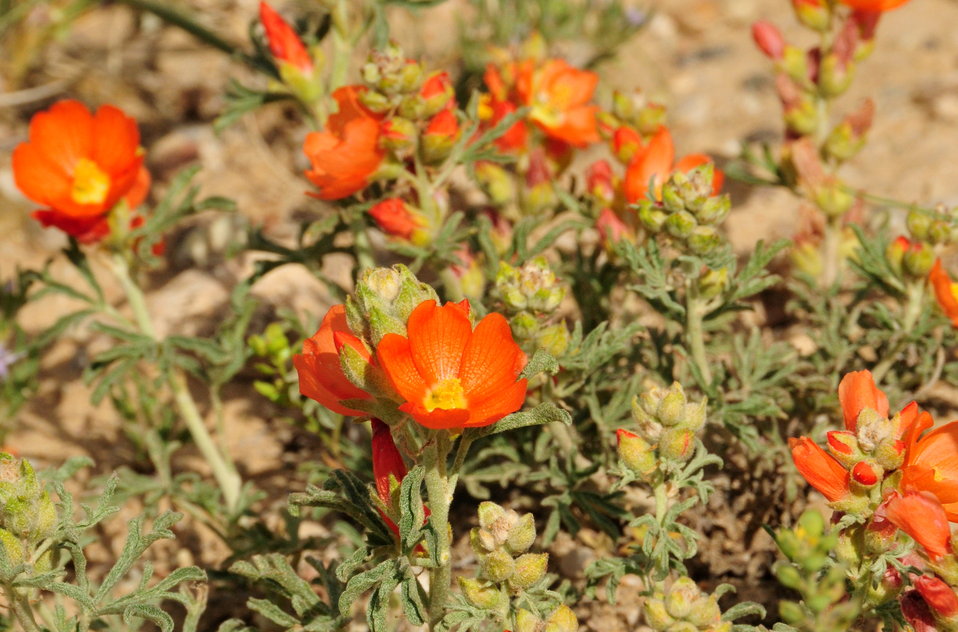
Scarlet globe mallow (Sphaeralcea coccinea) on Seedskadee National Wildlife Refuge 02

Scarlet globemallow is one of the most common wildflowers (forbs) in the sage-steppe habitat on and adjacent to Seedskadee NWR. In addition to being a hardy perennial forb, scarlet globemallow is memorialized in history as the last plant collected by Meriwether Lewis on the Lewis and Clark Expedition. Native Americans chewed scarlet globemallow and applied it as a paste to relieve the pain of burns and flesh wounds. This perennial forb, with a stout taproot, grows 3 to 18 inches in height, topped with deep orange or light pink to brick red flowers. Leaves are grayish-green and palmately lobed. Both the leaves and the several erect stems are covered with silver-gray hairs that reflect solar radiation and protect against drying. These hairs, along with its deep root system, make it very drought tolerant. Scarlet globemallow exhibits low seed germination due to a hard seed coat and reproduces mainly by rhizomes. The hard seed coat enables long-term seed viability in the seedbank. Seeds then germinate when conditions are occasionally favorable. Scarlet globemallow is eaten by almost all species of herbivores where it occurs and can be an important component of wildlife diets. It stabilizes the soil on disturbed areas through creeping rhizomes and proliferates until grasses out-compete it. Deep roots allow it to survive disking, fires, and grazing. When other species are eliminated, scarlet globemallow proliferates.Although scarlet globemallow is suppressed when grasses and shrubs begin growing, it will proliferate again once a disturbance occurs. This, along with its drought tolerance and soil stabilizing ability, make it a promising restoration species. Seeds are hard to collect, making them expensive, and the germination rate is very low.